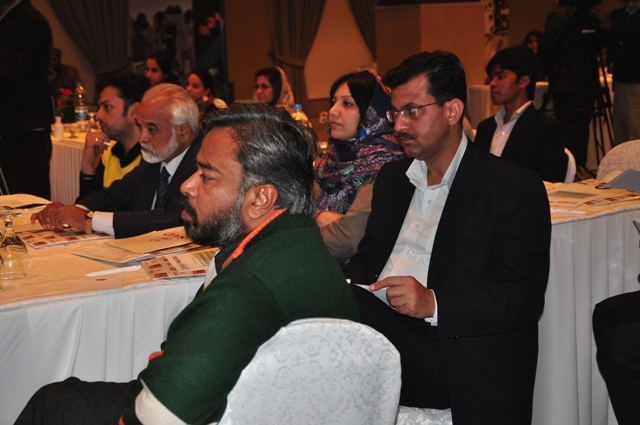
Education Workshop 141